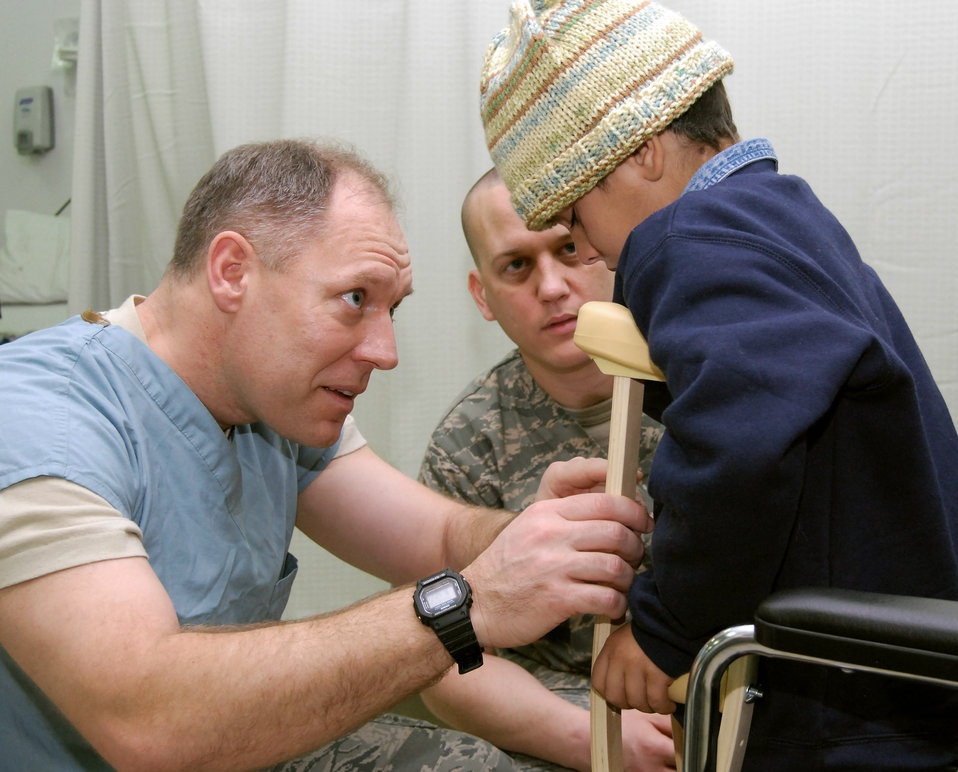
Iraqi aeromedical evacuation mission continues to evolve

Lt. Col. Robert Burgess and Tech. Sgt. Richard Kemp help fit a pair of crutches for Mustafa Jasim in the Air Force Theater Hospital's intermediate care ward at Joint Base Balad, Iraq, Dec. 20. Colonel Burgess, a 332nd Expeditionary Medical Operations Squadron physical therapist, is deployed from Shaw Air Force Base, S.C. Sergeant Kemp, a 332nd EMDOS medical technician, is deployed from Wilford Hall Medical Center at Lackland AFB, Texas.